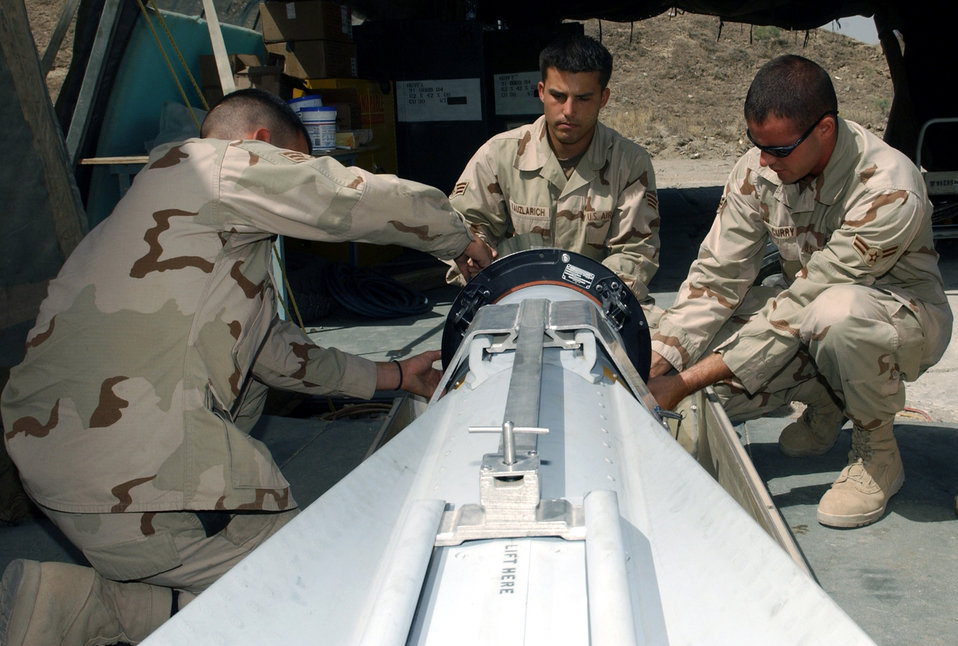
Giving Warthog its lethal bite

BAGRAM AIR BASE, Afghanistan -- (From left) Senior Airmen Luis DeLeon, Kenneth Kauzlaurich and Airman 1st Class Brett Curry attach a testing unit to the guidance system on a Maverick missile. The testing unit verifies the Maverick can identify and steer to a target. The Airmen are assigned to the 455th Expeditionary Aircraft Maintenance Squadron and are deployed from Eielson Air Force Base, Alaska.